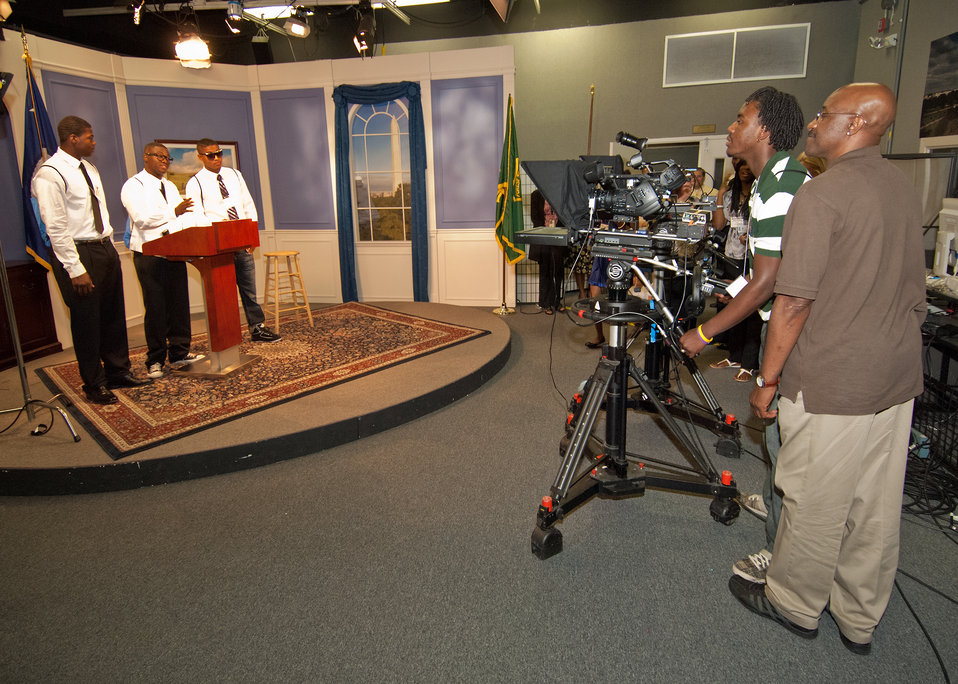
While on a Career Opportunity, seniors from Calvert High School Calvert, Texas tour the television studio United States Department of Agriculture (USDA) as part of a senior trip sponsored by the Farm Service Agency “Ag in the Classroom” program Monday, May 23, 2011, in Washington, DC. Seniors from Calvert High School Calvert, Texas (L to R) Jamarion Ramirez, Ja’Marcus Ashley, Blair Burns, stand in place for the President, Vice President and Head of Security in a reenactment of a television broadcast. Calvert High School Calvert, Texas, Senior Andre Ross acts as cameraman while (USDA) Creative Media and Broadcaster Center employee Larry Holmes advises the seniors on technique in the television studio.